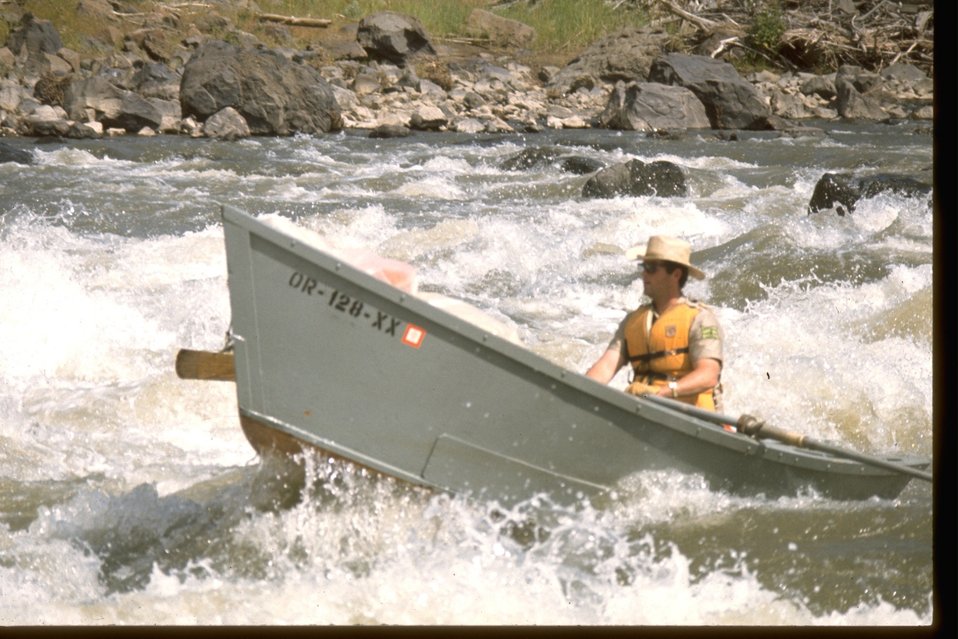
Driftboat along the Deschutes River.